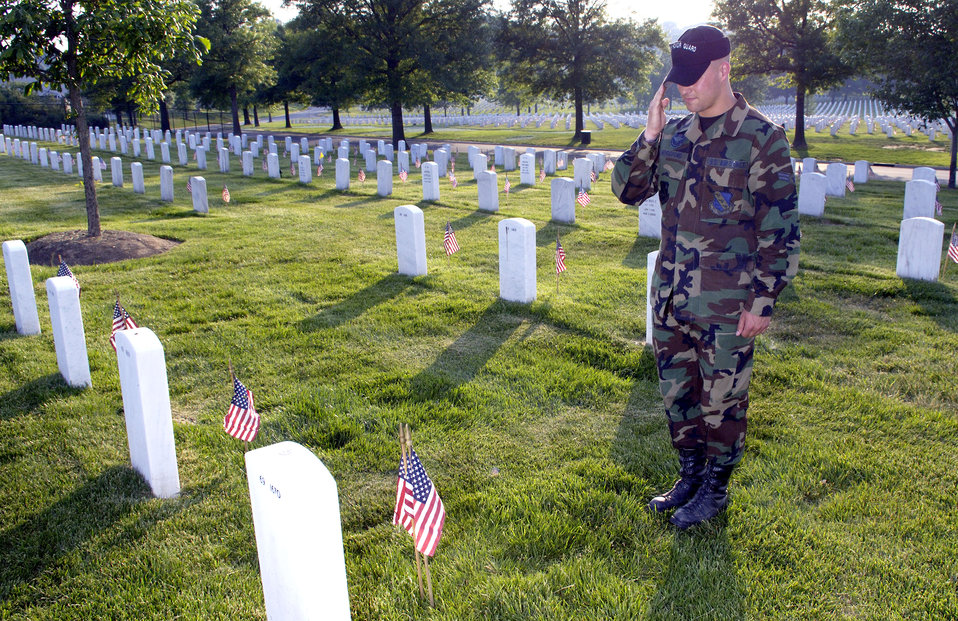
In remembrance

Airman 1st Class Dustin Woodford renders honors after placing a flag in front of his father's headstone at Arlington National Cemetery on Thursday, May 25, 2006. Airman Woodford is assigned to Bolling Air Force Base, Washington, D.C., and is a member of the United States Air Force Honor Guard Drill Team. He joined hundreds of Soldiers, Sailors, Airmen and Marines to place more than 227,000 flags at the cemetery.